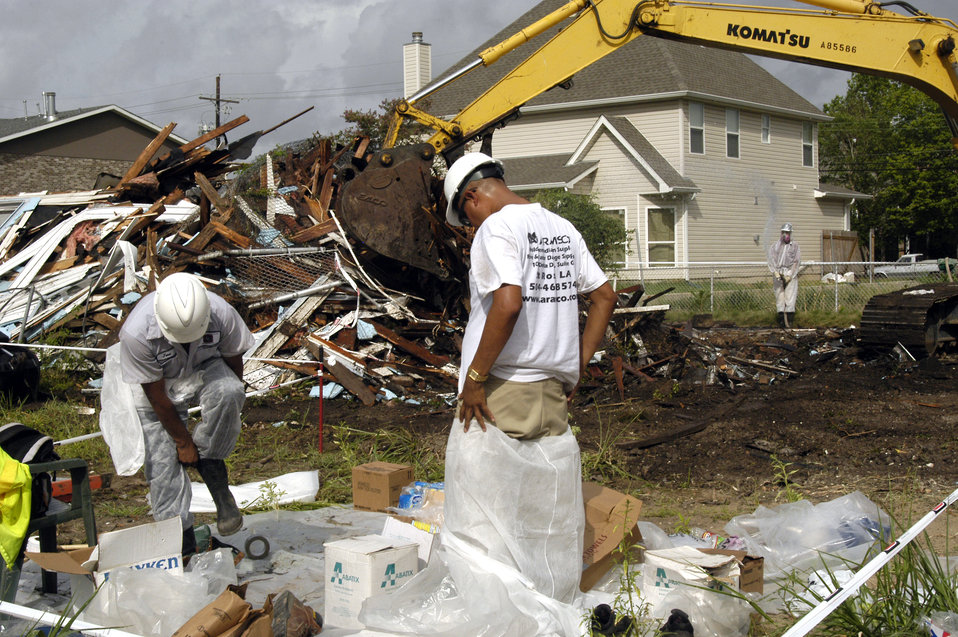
Many of the older homes and buildings in the New Orleans, LA, locale that were destroyed by Hurricane Katrina contained asbestos material (i.e. asbestos roofing tiles, transite siding, insulation, floor tiles, and popcorn ceilings). The U.S. Army Corps of Engineers (USACE) was mandated to follow strict environmental protocols in the demolition of these homes that were designated Regulated Asbestos Containing Material (RACM) demolitions. Personnel working inside the “hot zone” wore special suits with a respirator to prevent ingestion of asbestos particulates that might become airborne during the demolition project. A special decontamination area was established for workers.